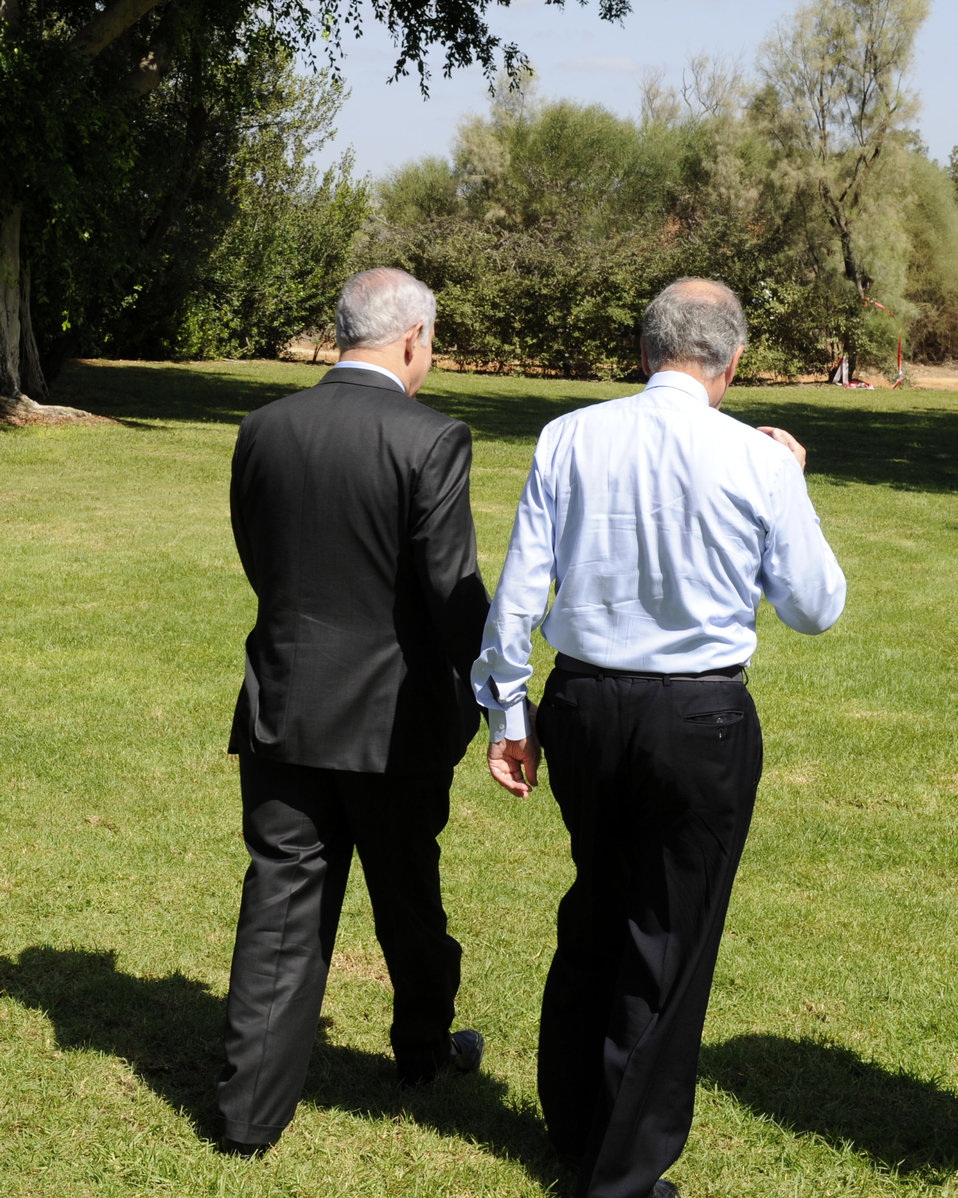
Special Envoy Mitchell Walks With Israeli Prime Minister Netanyahu

U.S. Special Envoy for Middle East Peace George J. Mitchell walks with Israeli Prime Minister Benjamin Netanyahu in Caesarea, Israel, on September 29, 2010.